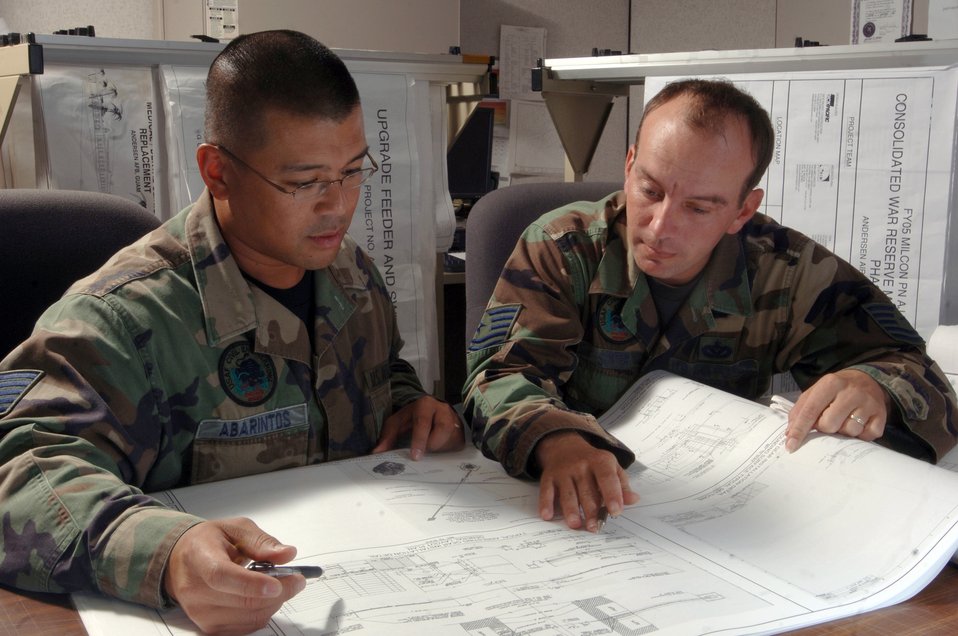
CE support

ANDERSEN AIR FORCE BASE, Guam (AFPN) -- Tech. Sgts. Gio Abarintos (left) and Chris Sorter review the design of a $24-million runway repair project at their facility here. The Airmen are engineering specialists with the 36th Civil Engineer Squadron. They provide day-to-day mission support to military and civilian personnel and 15 associate units here. They also maintain expeditionary capability for Air Force missions deploying to, originating from and transiting through the base.